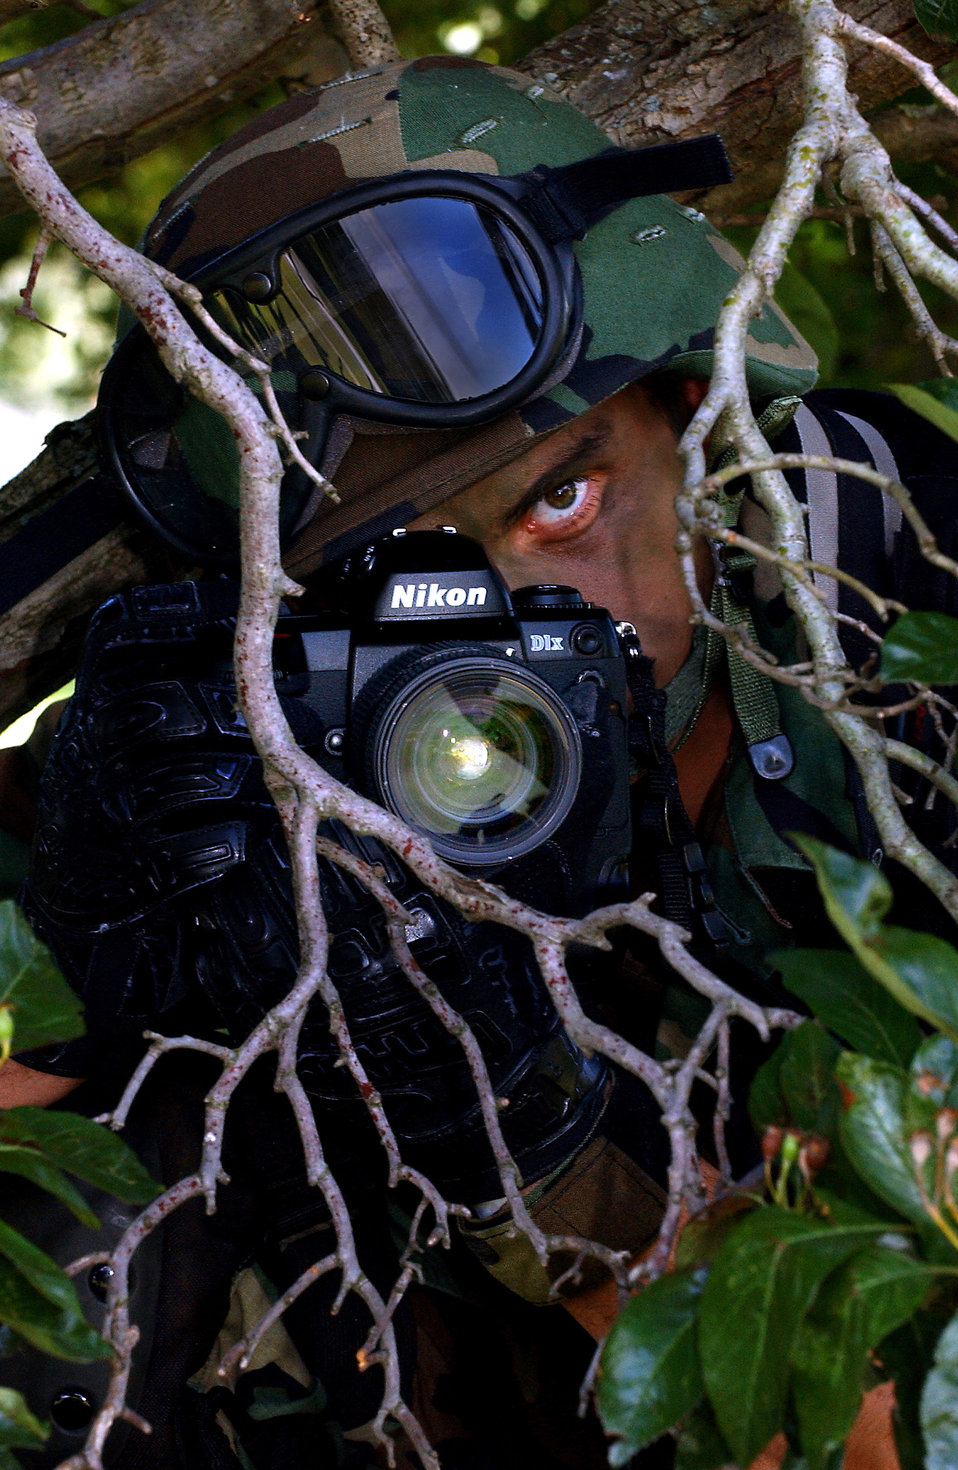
A click in the bush

ROYAL AIR FORCE MILDENHALL, England -- Airman 1st Class Franklin Perkins uses a Nikon D1X camera to photograph a mobility exercise here. Airman Perkins is a visual information specialist with the 100th Communications Squadron.